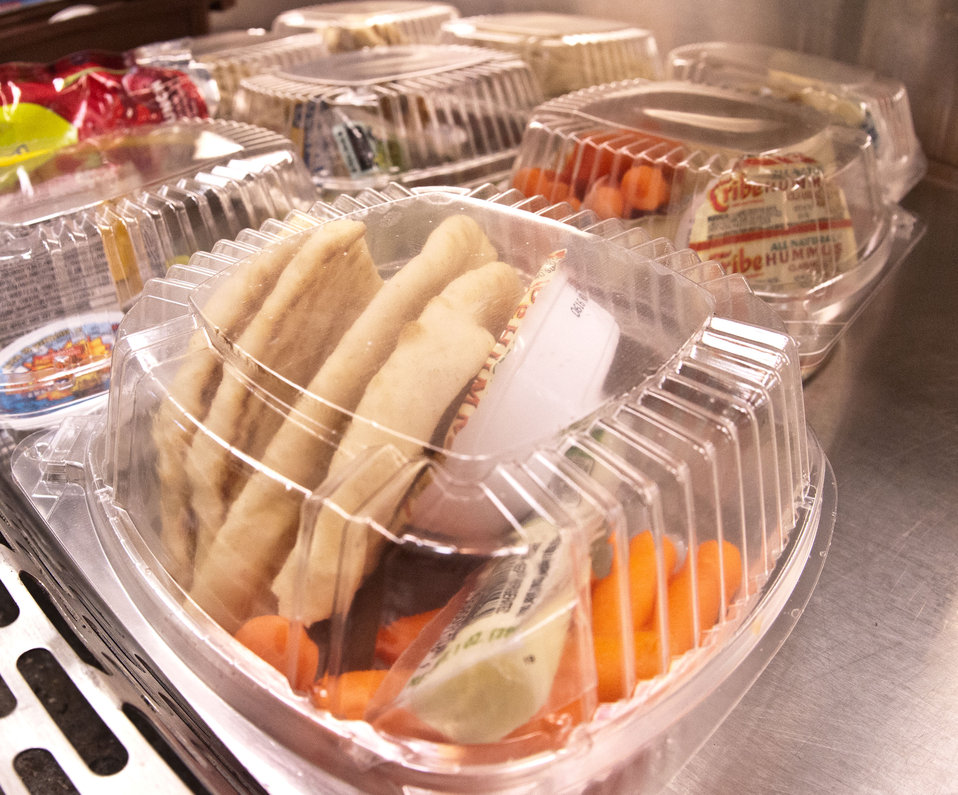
Pita wedges with cheese, hummus and carrots for the school lunch program are prepared on-site and are in a refrigerated display, ready for the students at Nottingham Elementary School in Arlington, VA, on Wednesday, October 12, 2011.